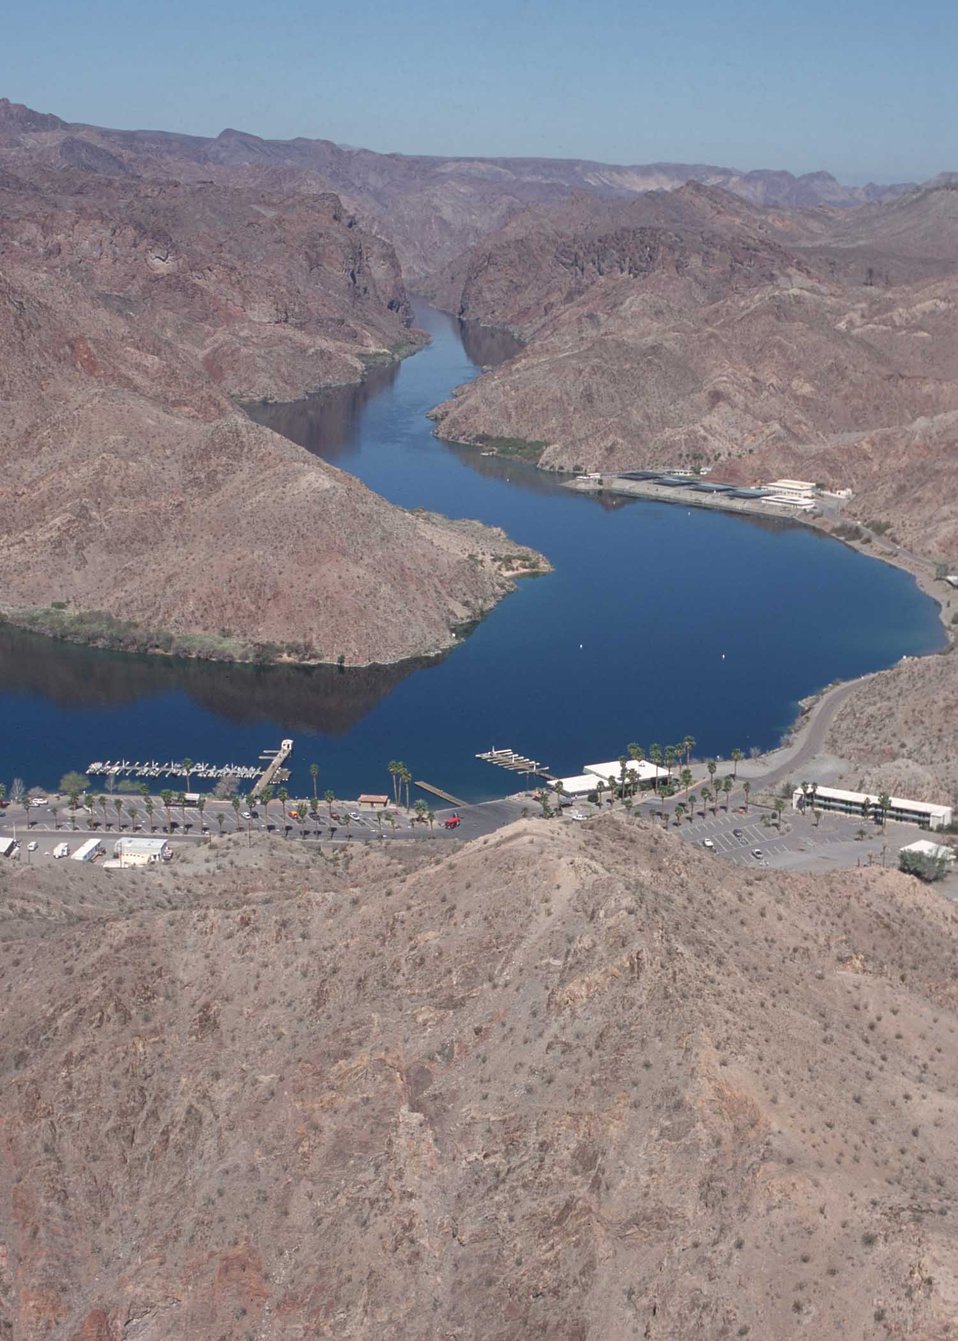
boating on the Colorado River, Clark County, NV.